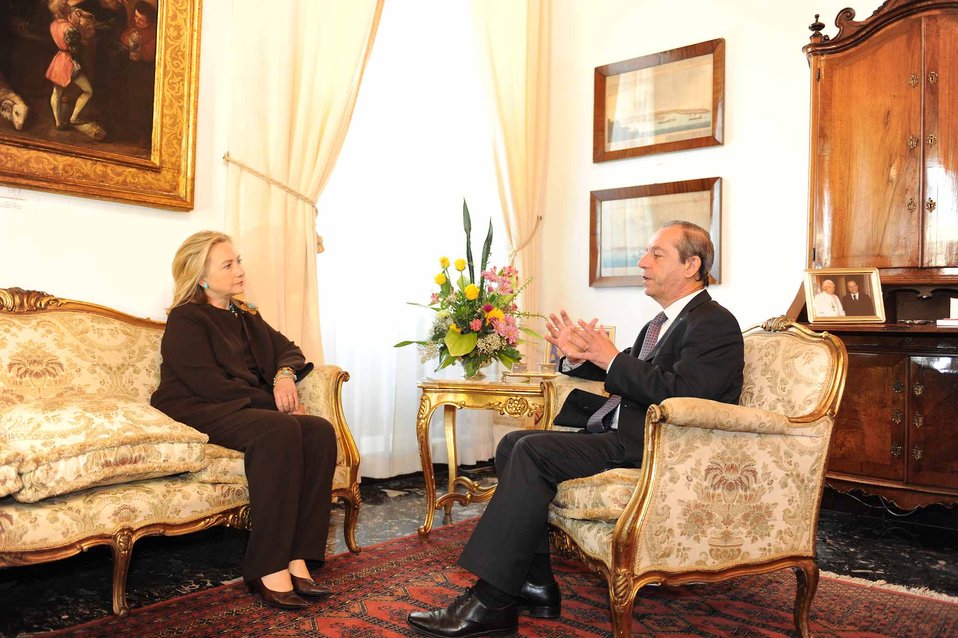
Secretary Clinton Meets With Maltese Prime Minister Gonzi

U.S. Secretary of State Hillary Rodham Clinton meets with Maltese Prime Minister Lawrence Gonzi at the Auberge de Castille in Valletta, Malta, on October 18, 2011.